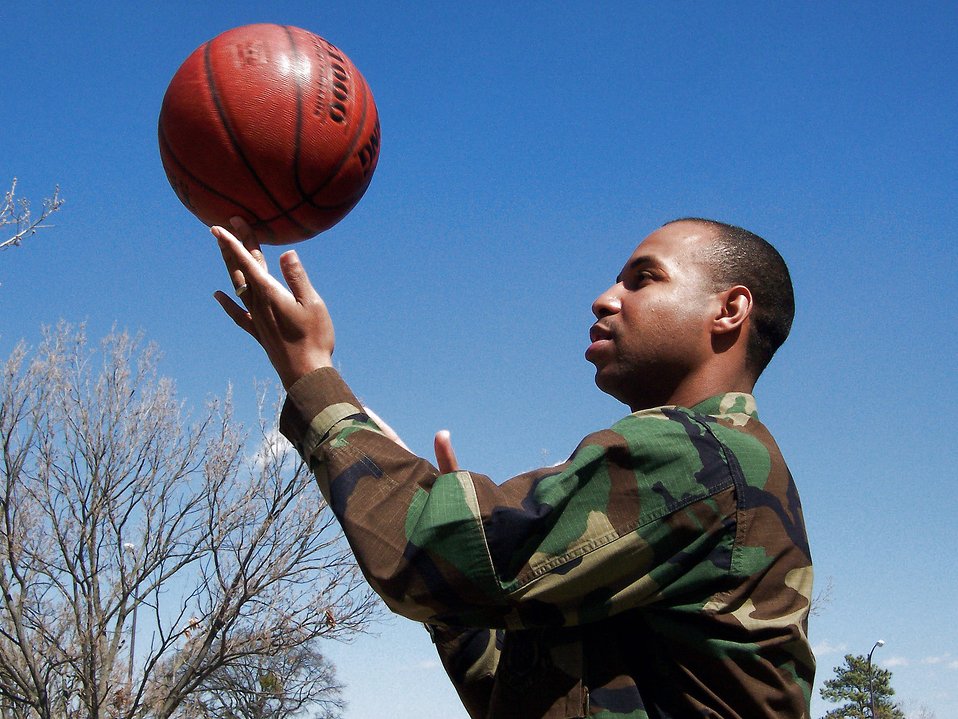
440th Airlift Wing officer shoots for a

Reserve Command member Capt. Kurtis Darden will be the captain of this year's All Air Force basketball team. The reservist , from Pope Air Force Base, N.C., is shooting for a